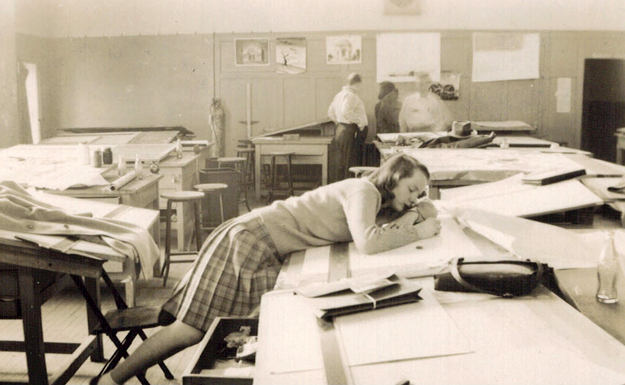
AOC Trailblazer: Georgia Shaw

Georgia Shaw was the first woman hired by the AOC as a draftsman, leading to a fulfilling 29-year career with the agency. After Georgia passed, her daughter honored her mother’s legacy by including the AOC’s logo on the memorial plaque that marks her grave.